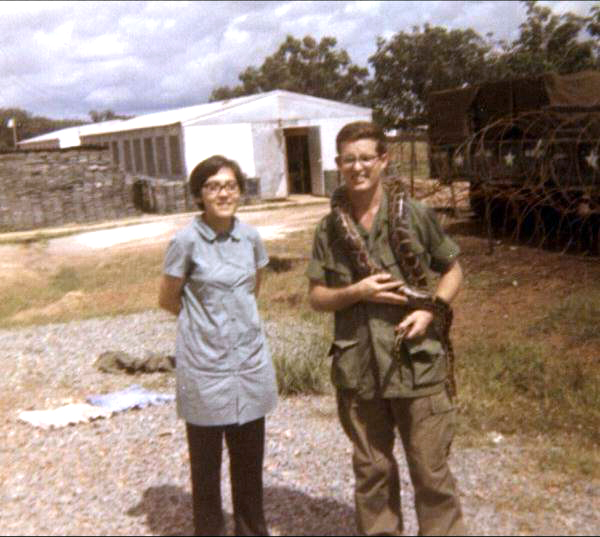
Joe Moniot, a data administrator in the Division of Bird Habitat Conservation, served in the Army from 1969 to 1972, the Navy from 1974 to 1980 and the U.S. Naval Reserve from 1987 to 1994. In the Army, he served in Vietnam and Sandia Base Army Hospital in New Mexico. In the Navy, he served at the Armed Forces Radiobiology Research Institute, Bethesda Maryland, aboard USS Canopus AS-34, and in Rota, Spain, and Charleston, S.C. In the Naval Reserve, he served in Green Bay, Wisconsin, and was recalled to active duty for Operation Desert Storm in 1991 when he served at the VA Hospital at Minneapolis, Minnesota. He attained the rank of Specialist 5 in the Army and Lieutenant Commander in the Navy.